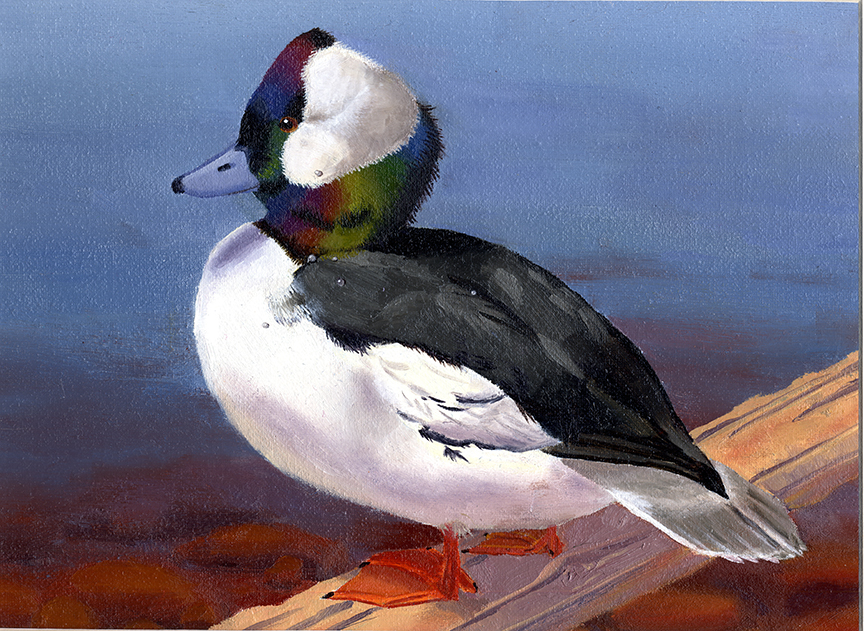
JRDuck2013WY

2013 Junior Duck Stamp Best of Show-Wyoming